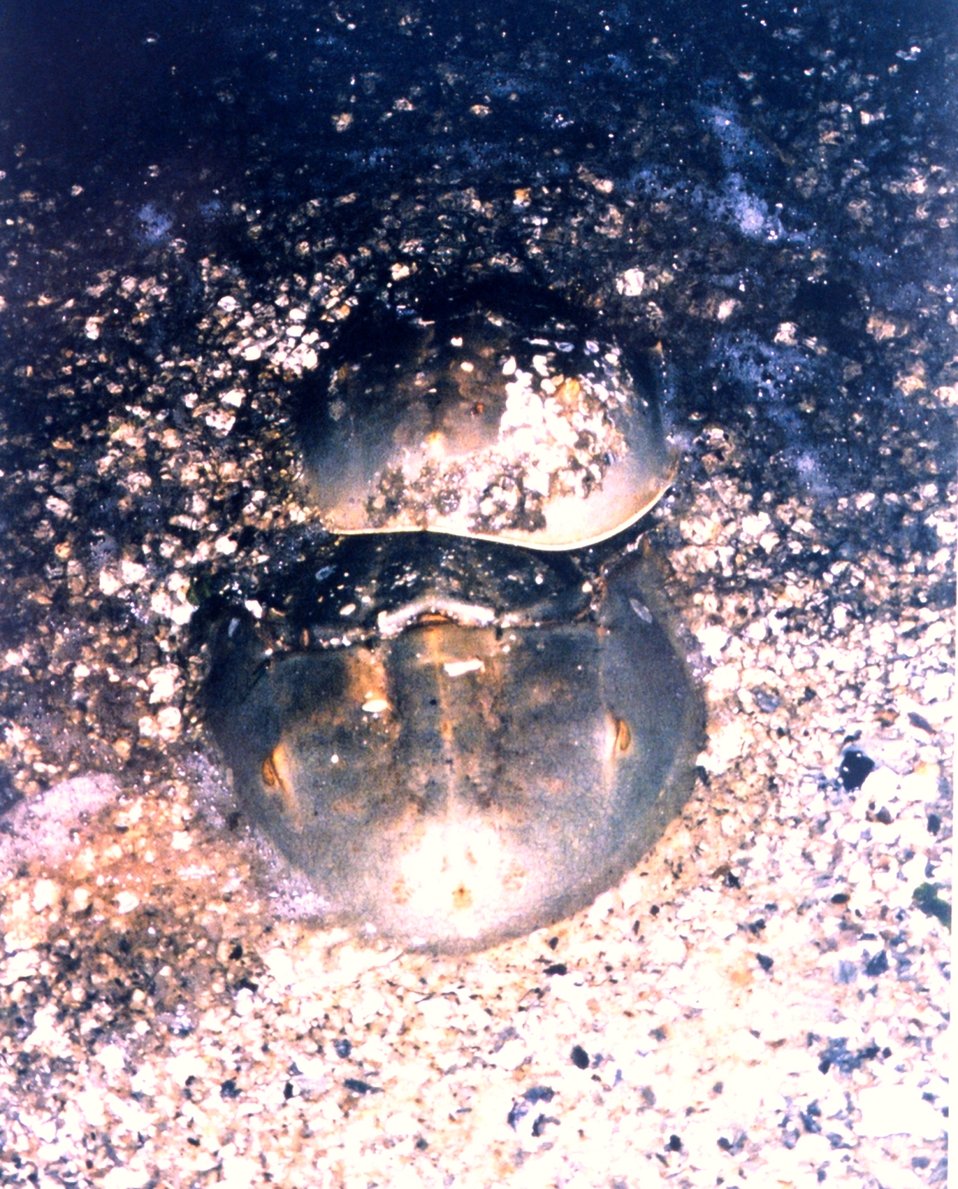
Class B pair of horseshoe crabs.